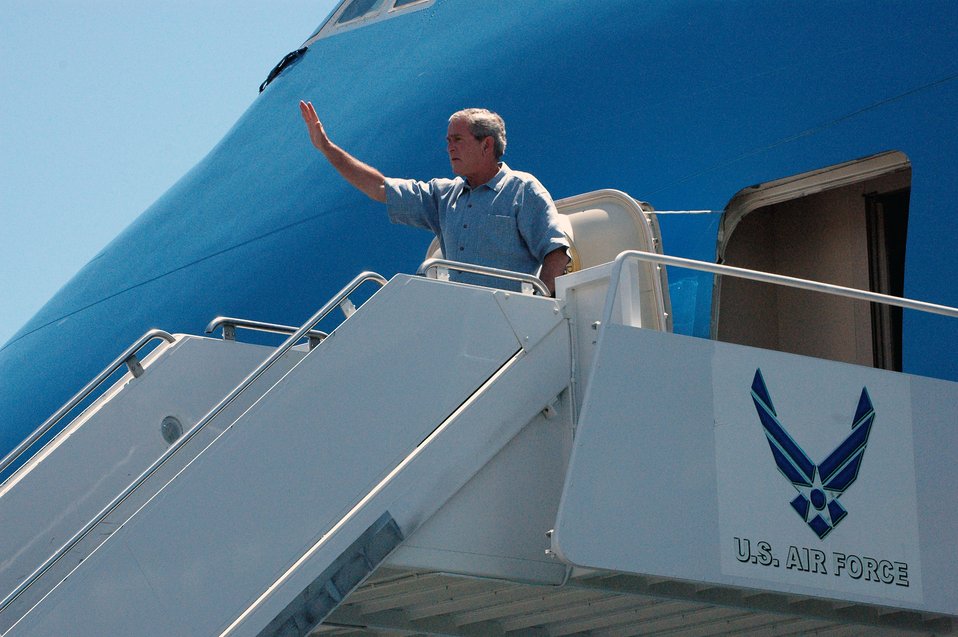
President visits Hickam

President George W. Bush exits Air Force One at Hickam AFB during his Sept. 8 visit to Hawaii. The president met with 33 wounded servicemembers and their families and presented Caroline Tom with a volunteer service pin for 15 years of donating her time.